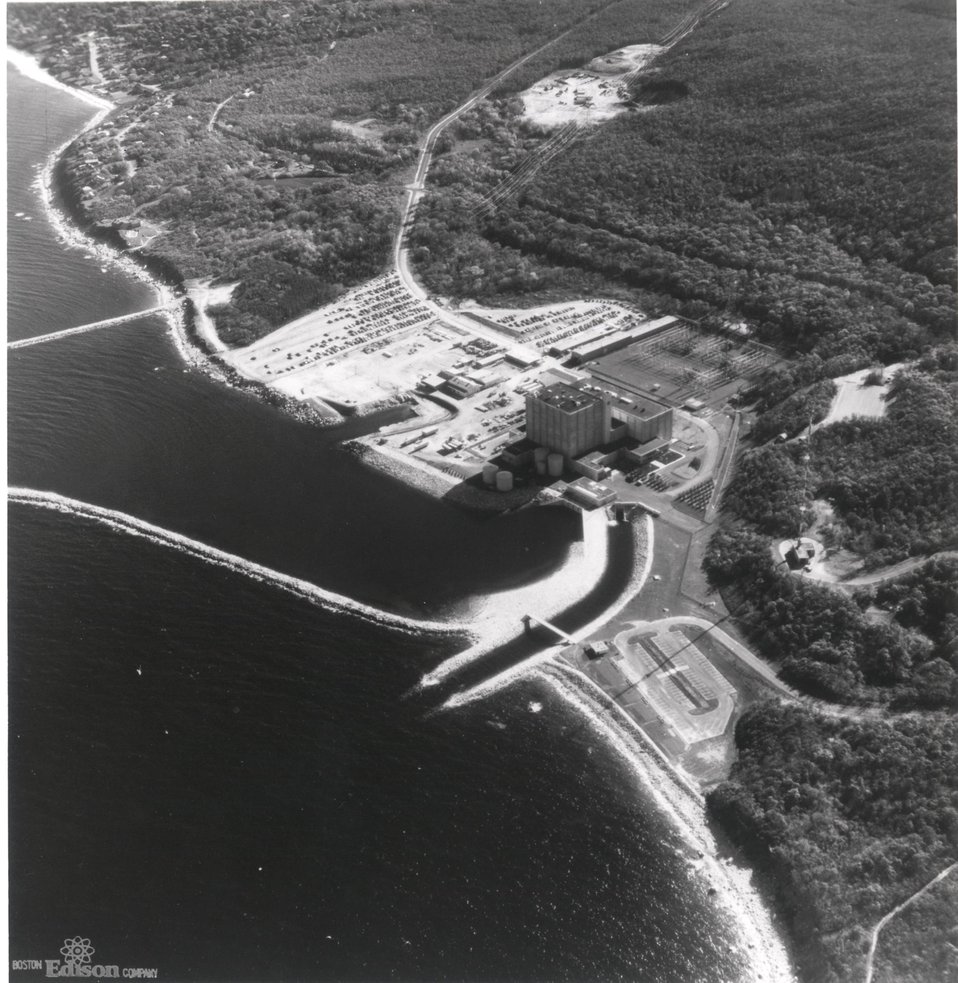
Boston Edison Company's Pilgrim Station Unit 1 at Plymouth, Mass. An 1800 foot breakwater juts from a two-acre recreation spot called the 'Pilgrim Shorefront.' Circa 1972.